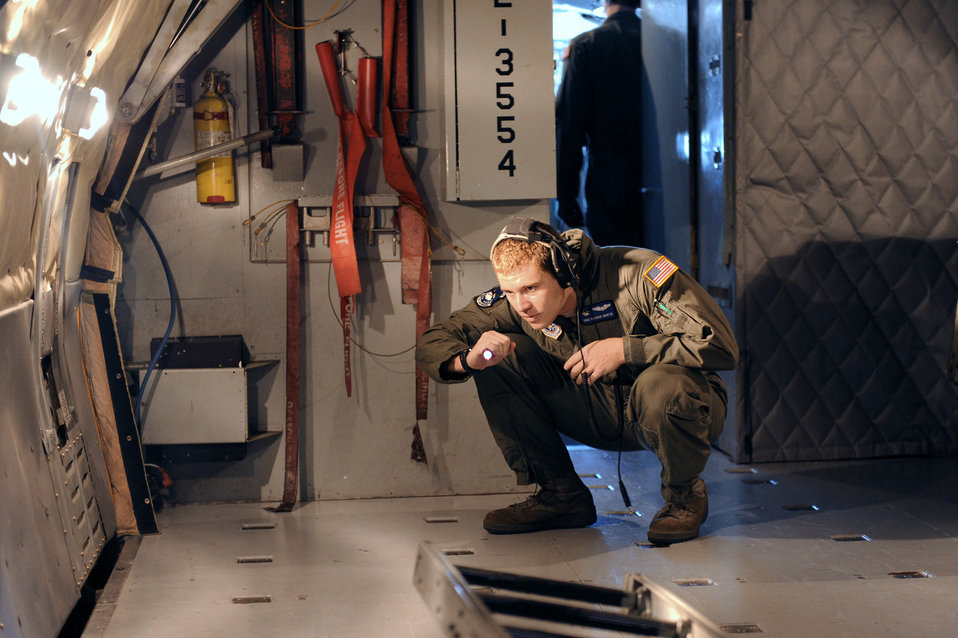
KC 135 Stratotanker refueling mission

Staff Sgt. Patrick Martin inspects the rear cargo door on a KC-135 Stratotanker during a training mission April 21, 2010, at McConnell Air Force Base, Kan. Sergeant Martin is a boom operator assigned to the 344th Air Refueling Squadron.